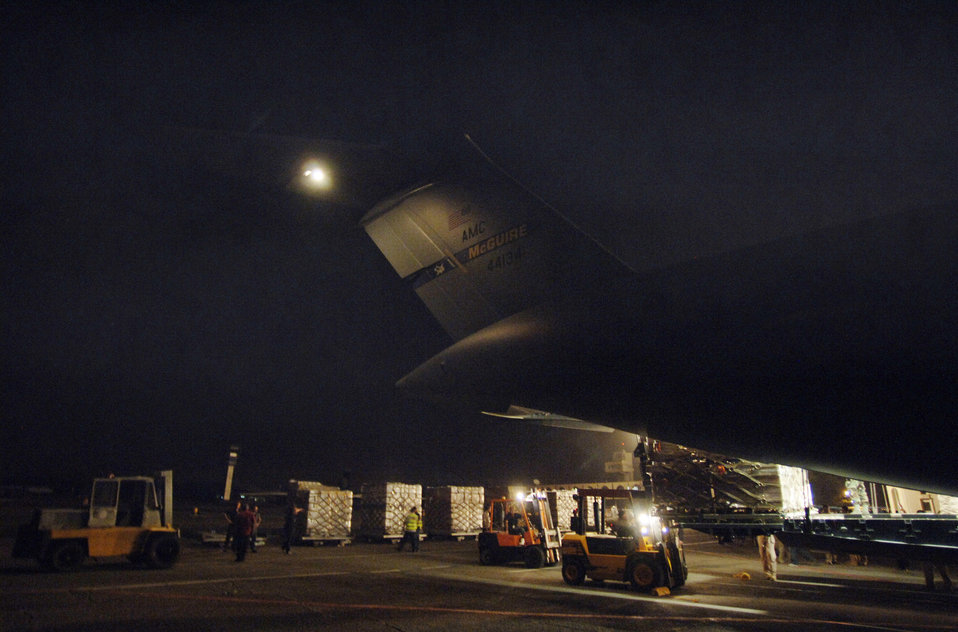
Humanitarian Relief in Tbilisi, Georgia

A C-17 Globemaster III delivers the first wave of humanitarian aid to Tbilisi, Georgia, from Ramstein Air Base, Germany, Aug. 13. Air Force mobility Airmen and aircraft delivered more than 78 tons of humanitarian aid supplies Aug. 13 and 14. The delivery was a joint-service effort between U.S Army Europe Soldiers and Airmen representing U.S. Air Forces in Europe and Air Mobility Command.